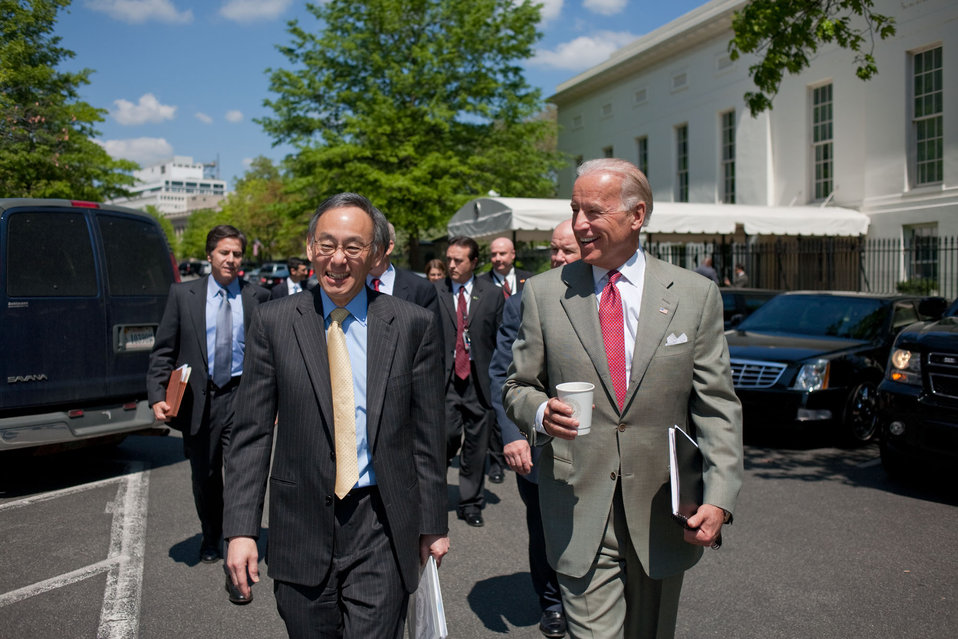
V041410DL-0074edit

Vice President Joe Biden and Secretary of Energy Chu walk from the West Wing of the White House to the Eisenhower Executive Office Building for a meeting with Nuclear Industry Leaders, April 14, 2010.